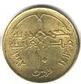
Egyptian coin